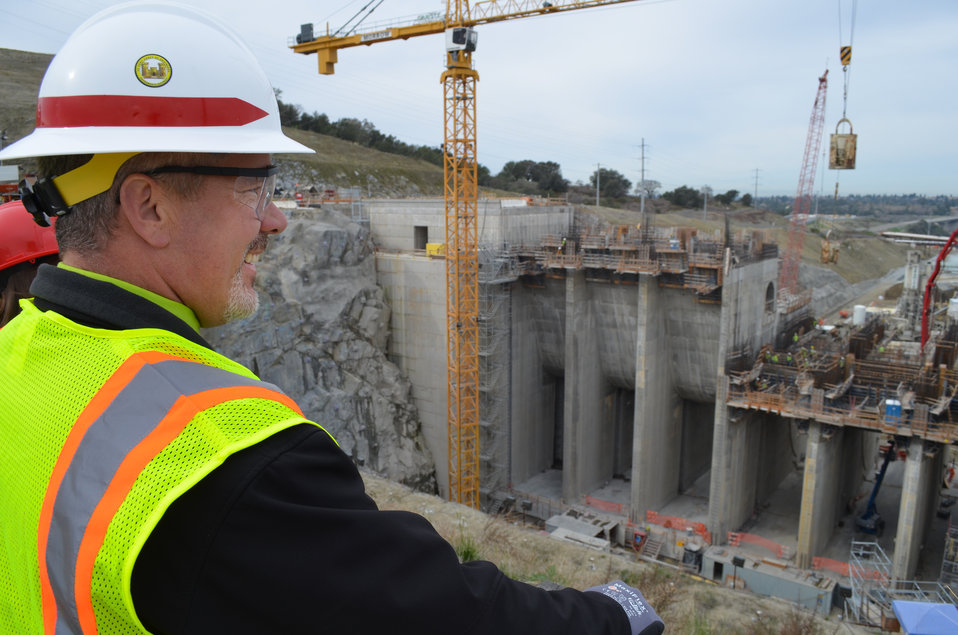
Greg Crannell vice principal of Folsom High School views Folsom Dam auxiliary spillway construction

Greg Crannell, vice principal of Folsom High School in Folsom, Calif. brought nearly 30 physics and engineering students to share his view of the U.S. Army Corps of Engineers Sacramento District's Folsom Dam auxiliary spillway construction site February 18, 2014 in Folsom, Calif., during National Engineer Week. National Engineer Week is typically celebrated the third full week in February to recognize engineering feats such as the spillway. The Corps, together with the U.S. Bureau of Reclamation and state and local partners, is building the spillway to reduce flood risk throughout the Sacramento region.